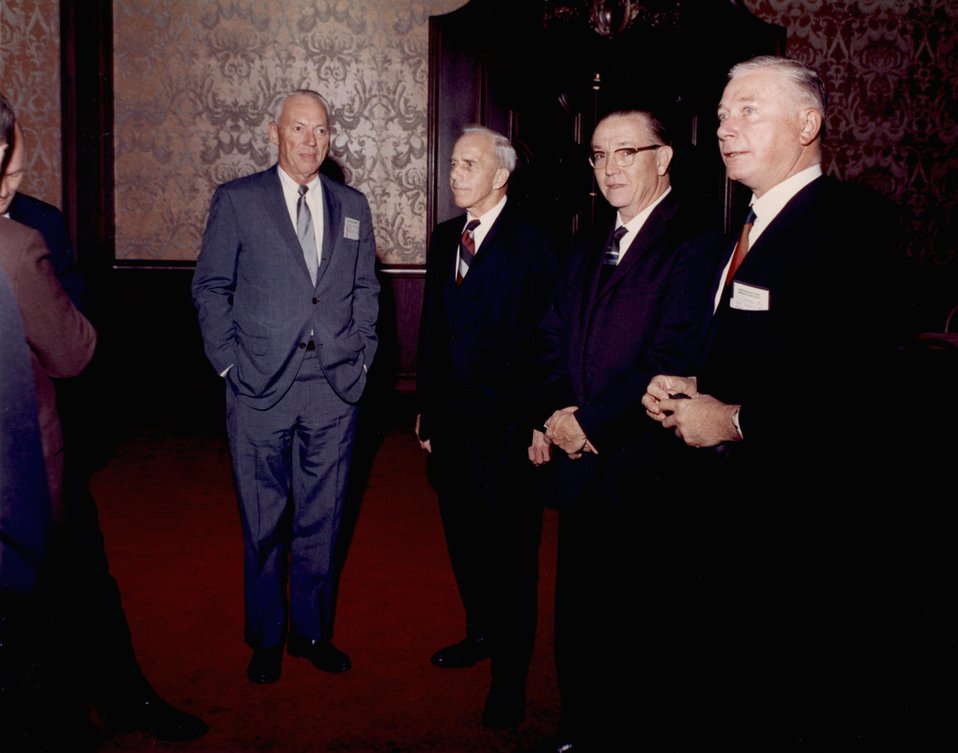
Fermi Award. Recipient: Walter Zinn. Date: Dec 2, 1970.